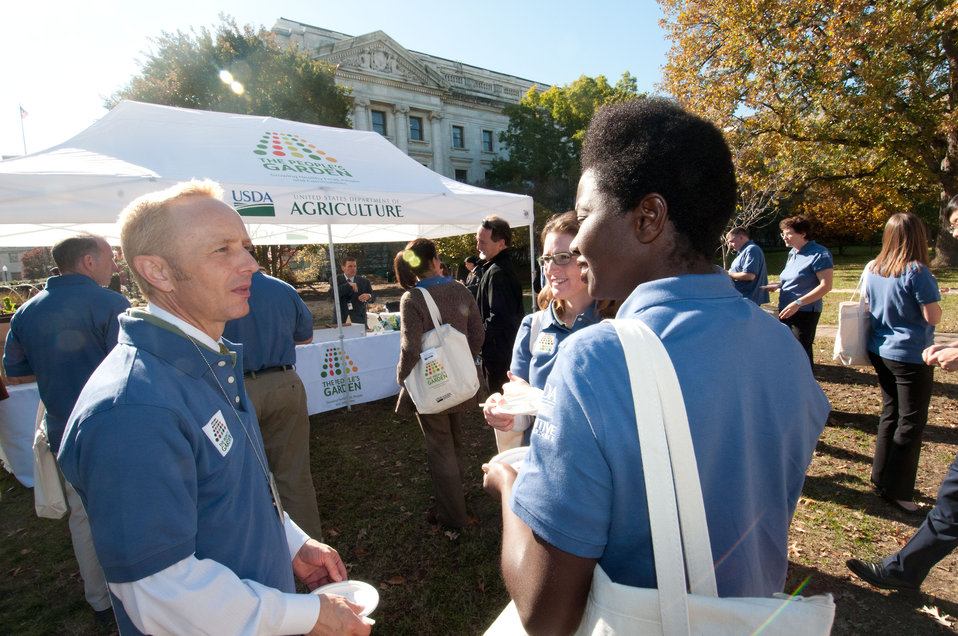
Graduation day of the 2011 U.S. Department of Agriculture (USDA) Executive Master Gardeners, on Tuesday, November 8, 2011 in Washington, DC. During the past six-weeks, students contributed 40-hours of volunteer time, completed studies and testing to receive their certificates today as an Executive Master Gardener. Many of the sessions occurred before work hours, during lunchtime or at community garden project sites such as Powell Middle School. USDA challenges its employees to establish People's Gardens at USDA facilities worldwide or in community gardens. People's Gardens vary in size and type, but all have a common purpose - to help the community and the environment. To learn about the People’s Garden Initiative visit www.usda.gov/wps/portal/usda/usdahome?contentid=peoples g....